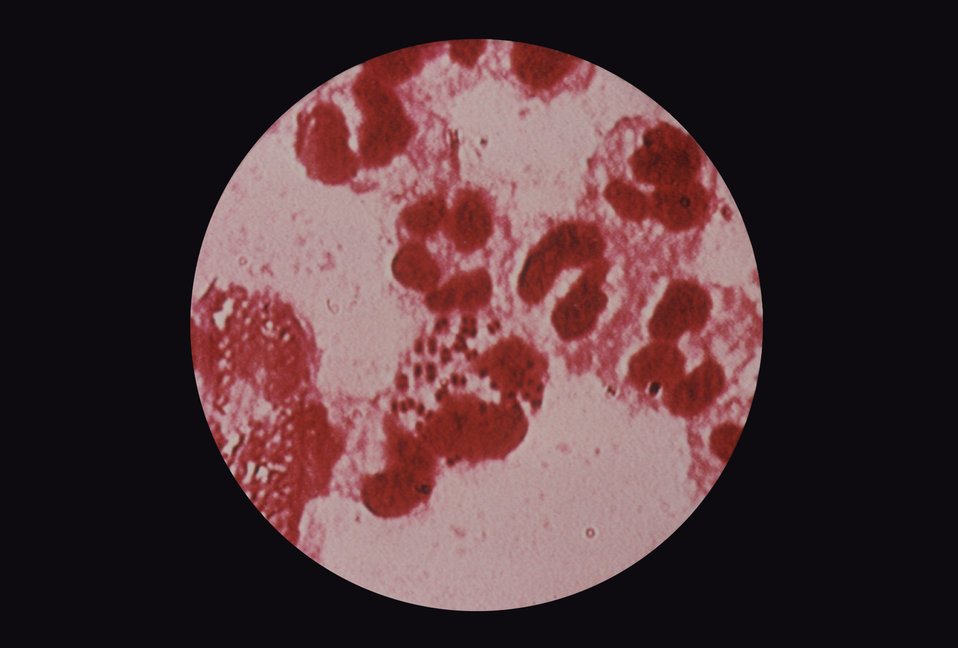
This is a photomicrograph of a urethral discharge specimen showing the Gram-negative diplococcus, Neisseria gonorrhoeae.